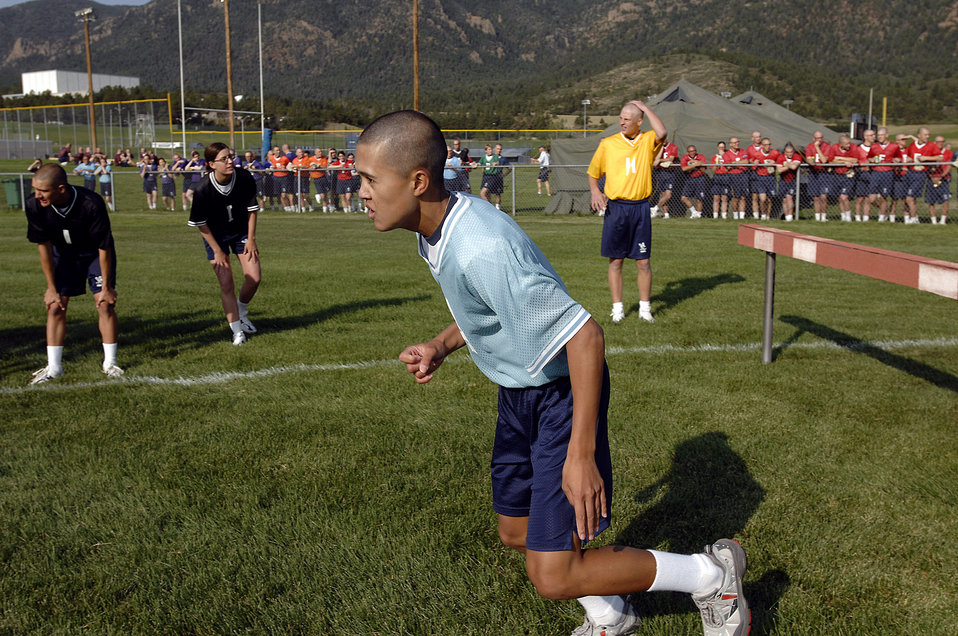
Academy basic cadets team up for Field Day

U.S. Air Force Academy basic cadet Tate Montgomery participates in the steeplechase event during Field Day July 12 at the Academy's athletic fields in Colorado Springs, Colo. Cadets compete in various athletic events to test their teamwork and athletic skills.